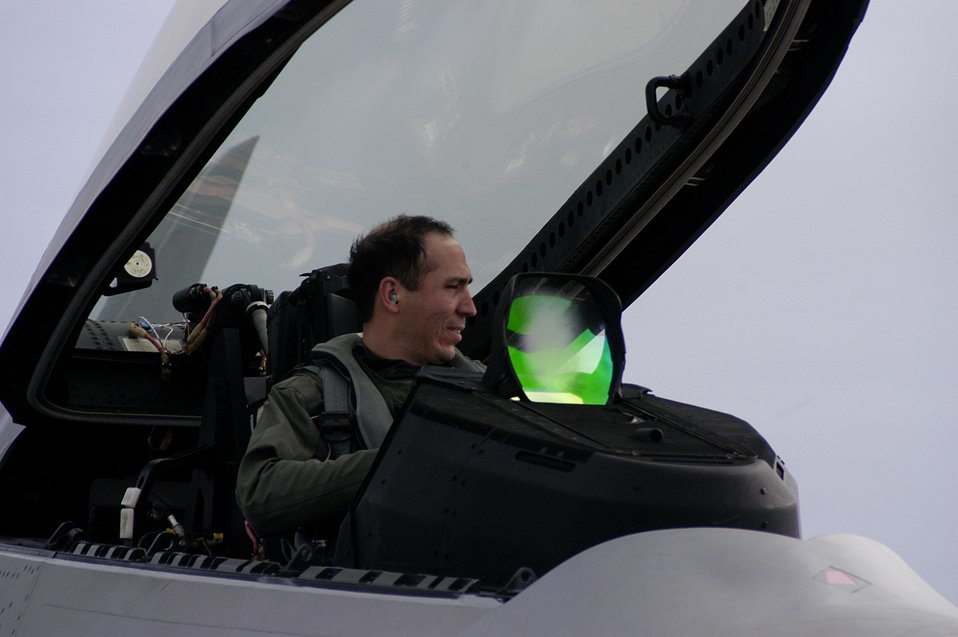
Largest deployment of F-22s under way

Lt. Col. Orlando Sanchez removes his helmet after arriving with his F-22 Raptor squadron Jan. 18 to Andersen Air Force Base, Guam. The F-22s and more than 250 Airmen are deployed out of Elmendorf AFB, Alaska. Colonel Sanchez is the 90th Expeditionary Fighter Squadron commander.